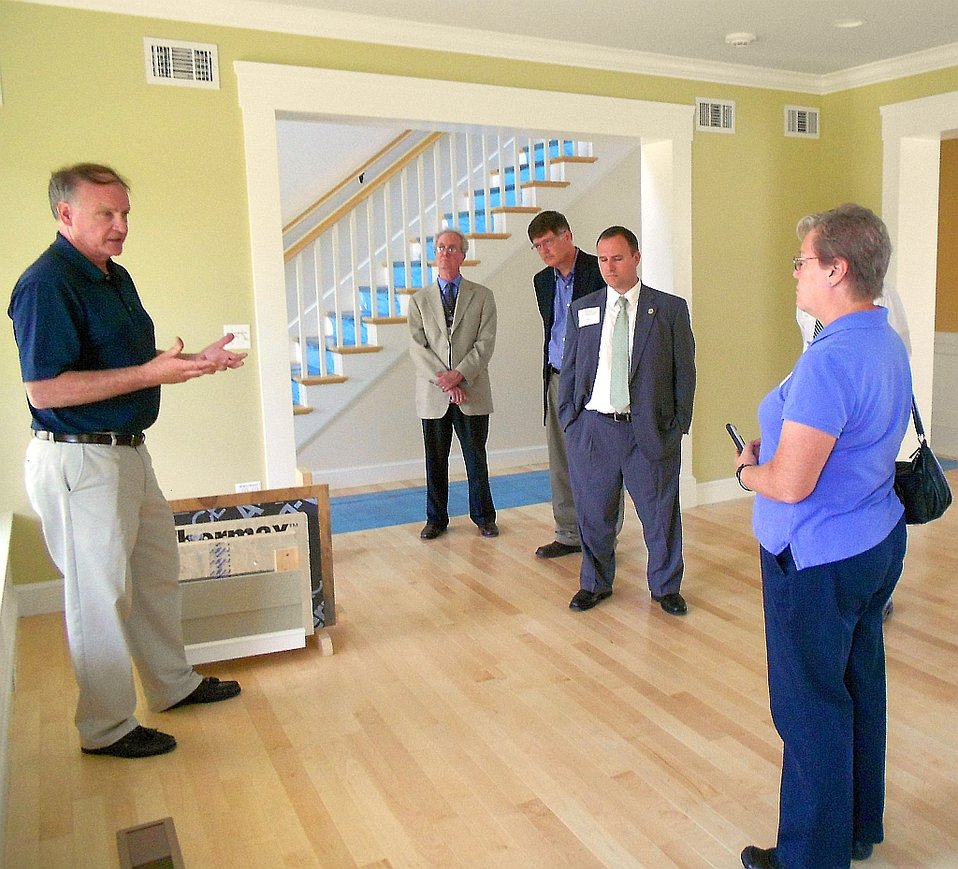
Mayor of Gaithersburg and City Council members Tour NZERTF

Dr. Hunter Fanney (Far Left) Chief of the Building Environment Lab in NIST’s Engineer Lab (EL) and EL Lab Deputy Director for Building and Fire Research Dr. William Grosshandler (2nd from Left ) explain building insulation standards to Gaithersburg City Manager Tony Tomasello (3rd from Left) and City Council Member Jud Ashman (Center) and City Council Member Cathy C. Drzyzgula (far right) from the living room of NIST’s Net Zero Energy Residential Test Facility.